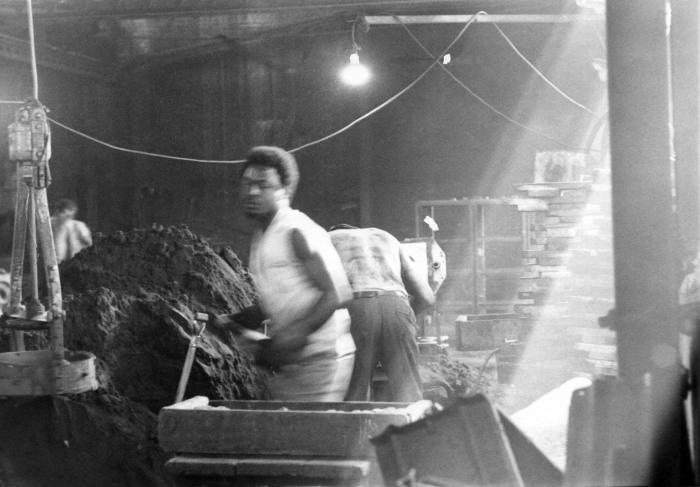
Thought to be from the 1970s, this historic image provided by the Center for Disease Control's (CDC), National Institute for Occupational Safety and Health (NIOSH), depicted an industrial worker inside a factory where he was shoveling sand into what appeared to be a mold, i.e., sand mold. The man was not wearing a filtered breathing mask, goggles, or gloves, all of which may have helped to protect him from the potential health risks that exist under such circumstances,